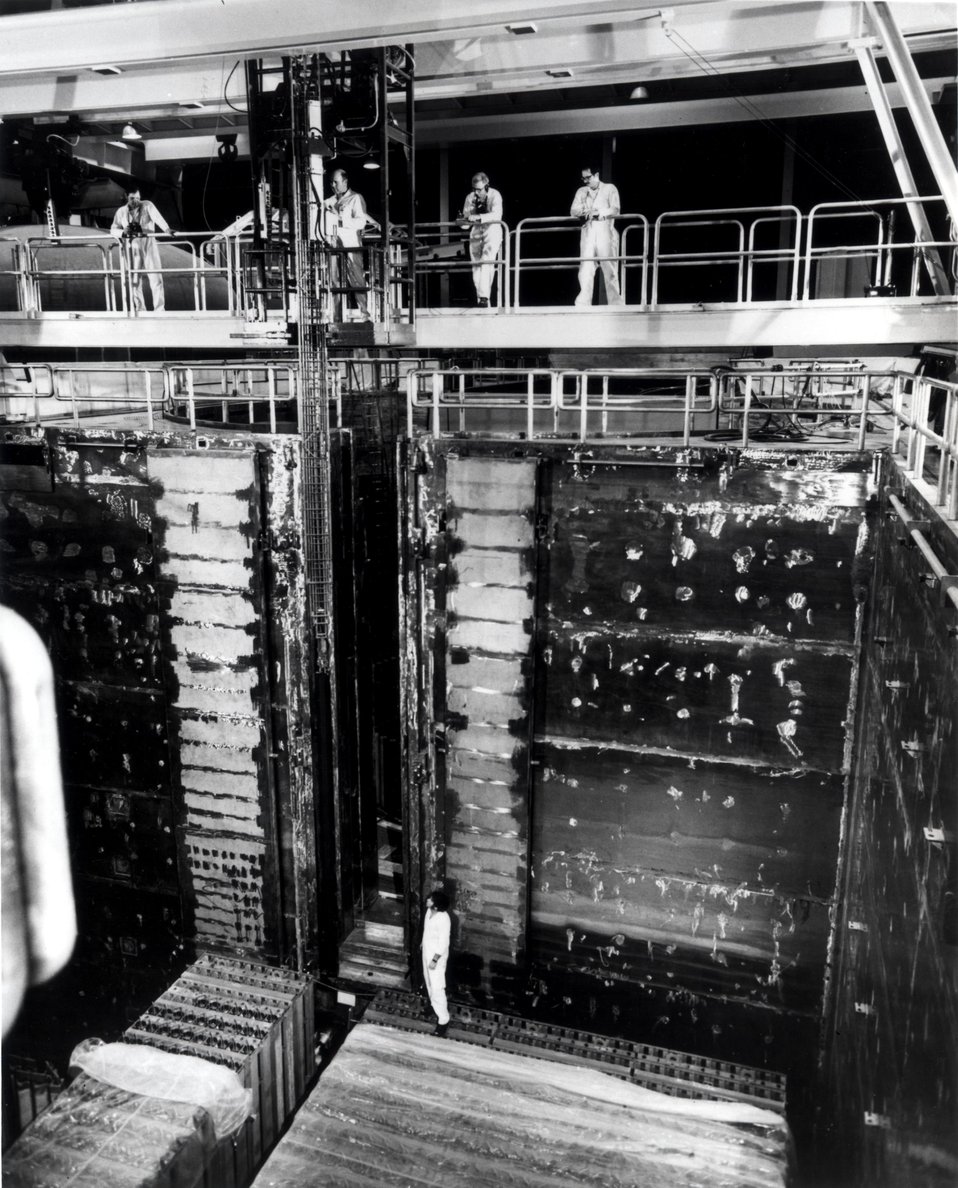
Loading of uranium dioxide fuel into TVA's Browns Ferry Nuclear Power Plant, Unit 1. Circa 1974.